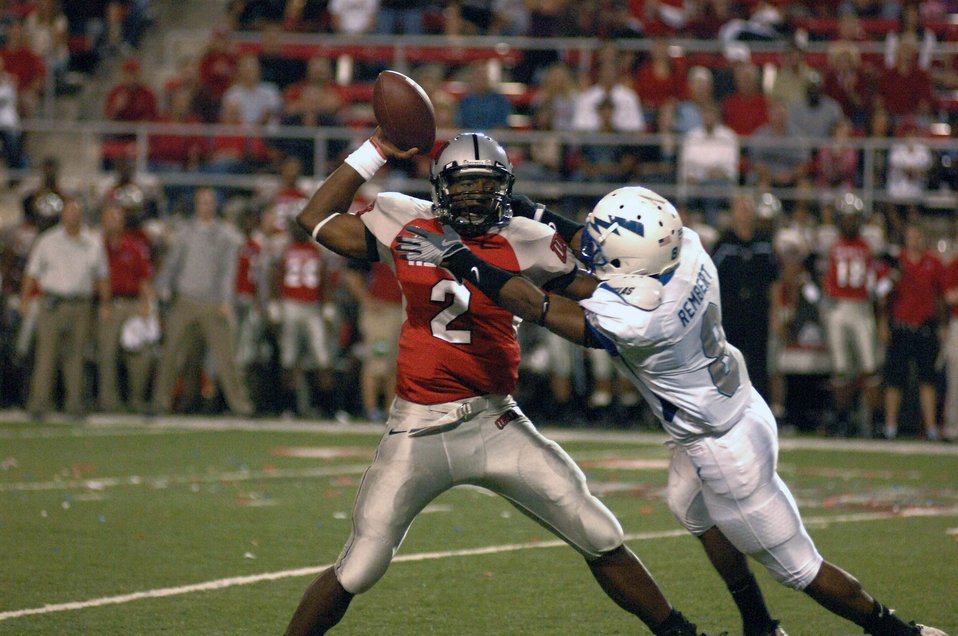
Not on my watch!

U.S. Air Force Academy cornerback Reggie Rembert disrupts quarterback Omar Clayton's passing during a corner blitz Oct. 18 in Las Vegas. The Falcons won against the University of Nevada, Las Vegas 29-28 and improved to 5-2 on the season.